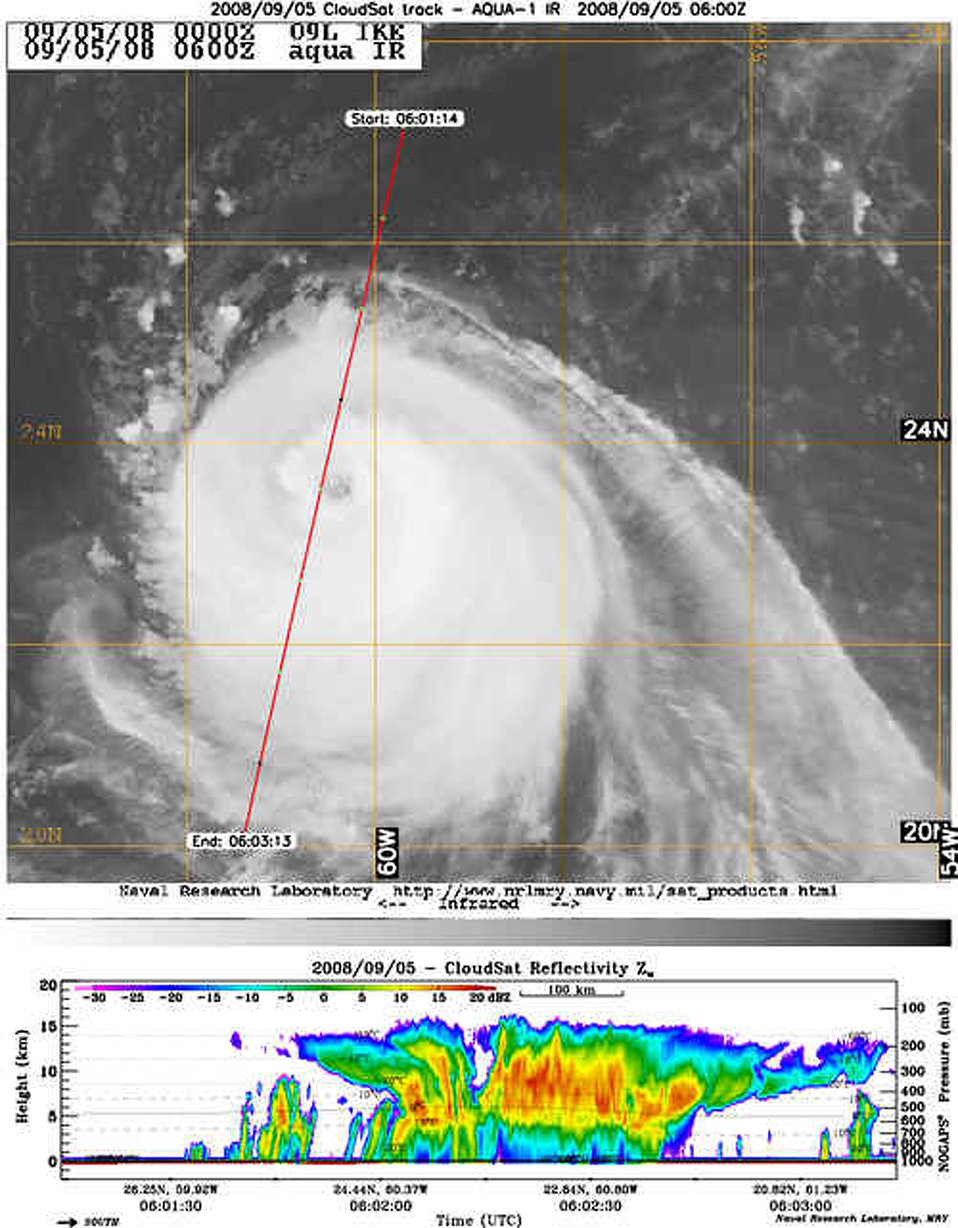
CloudSat's Sideways View of Ike as a Powerful Category 4 StormNASA's CloudSat satellite's Cloud Profiling Radar captured a sideways look across Hurricane Ike on Sept. 7 at 18:24 UTC (4:24 p.m. EDT) when he was a Category 4 hurricane.